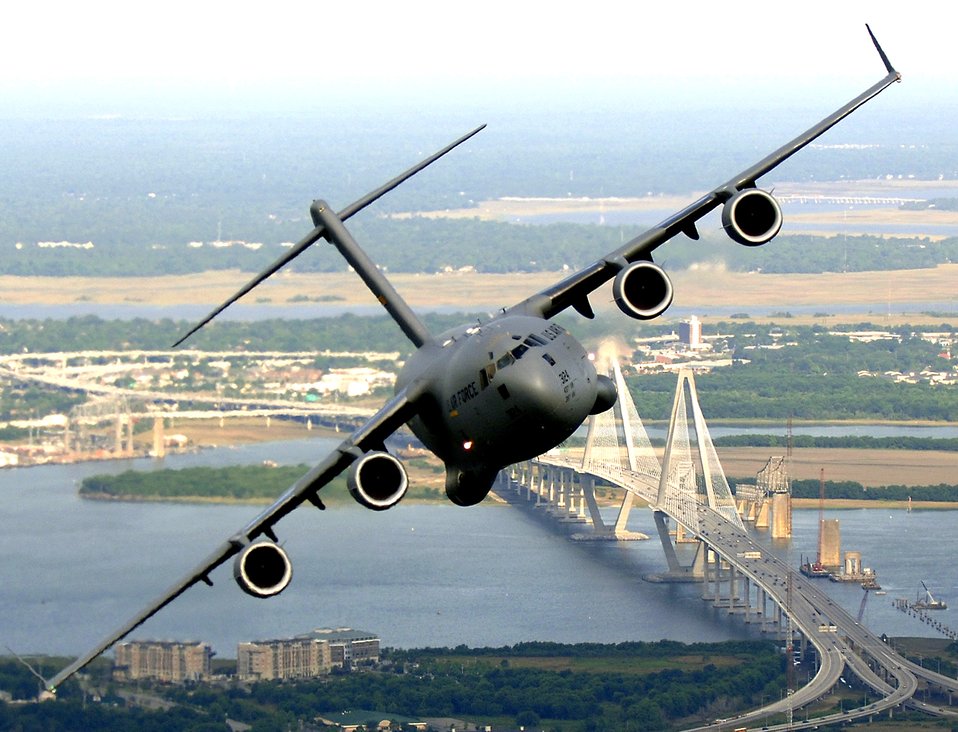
C-17s over Charleston

A C-17 Globemaster III from the 14th Airlift Squadron, Charleston Air Force Base, S.C., banks over the Arthur J. Ravenel Bridge in Charleston, S.C., during a training mission on Tuesday, May 16, 2006.